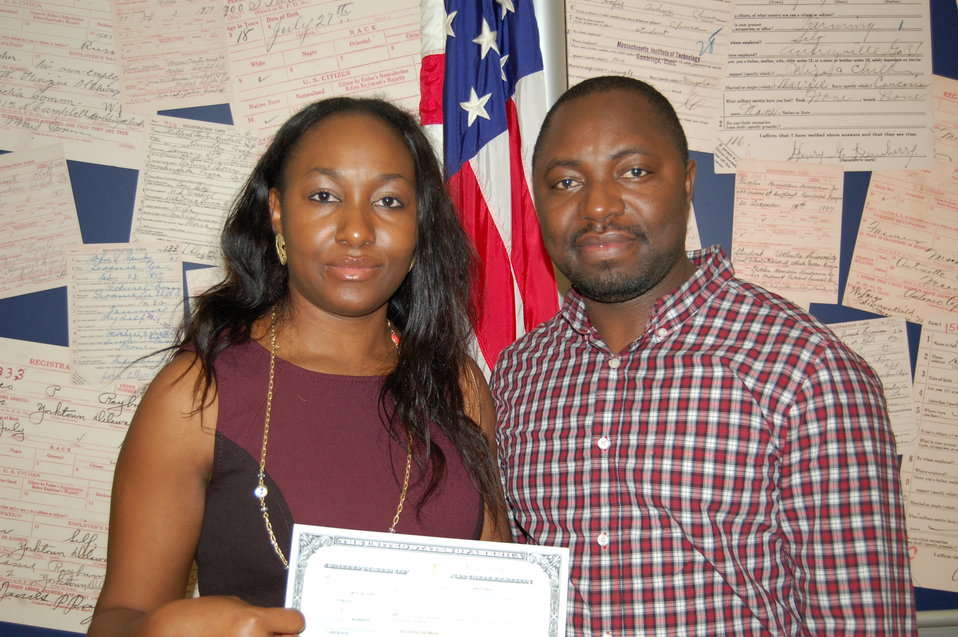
New Citizens